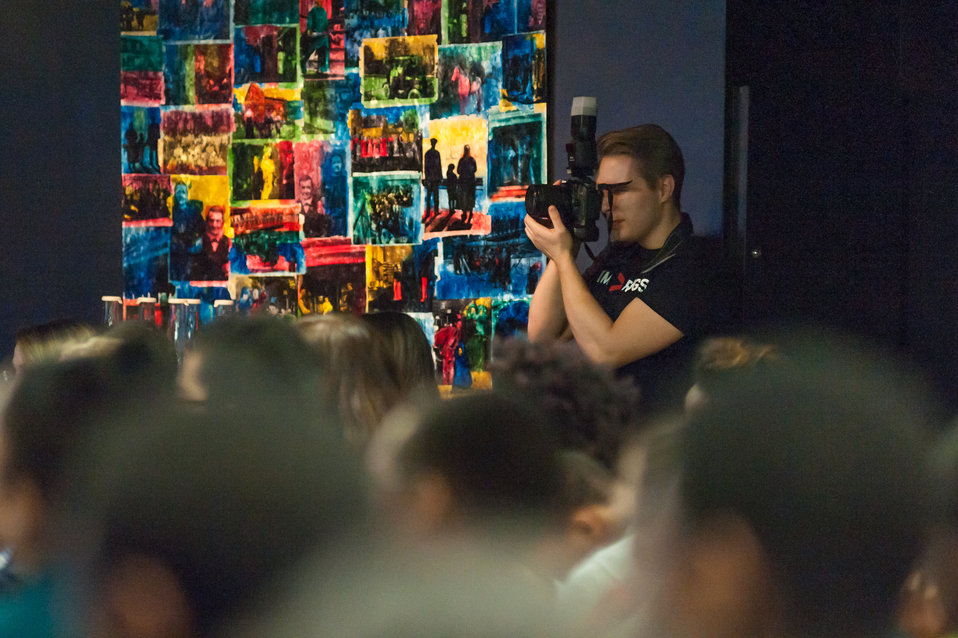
Mentor NDFW Event 2014

Mentor Foundation USA, in partnership with the National Institute on Drug Abuse (NIDA) and other key partners hosted a Youth Drug Facts Rally at the House of Sweden on Thursday, 30th January 2014. Approximately 200 students from five local high schools attended and had the opportunity to interact with top U.S. scientific experts and inspiring guest speakers to “shatter the myths” about drugs and substance abuse, while pledging to stay drug-free.